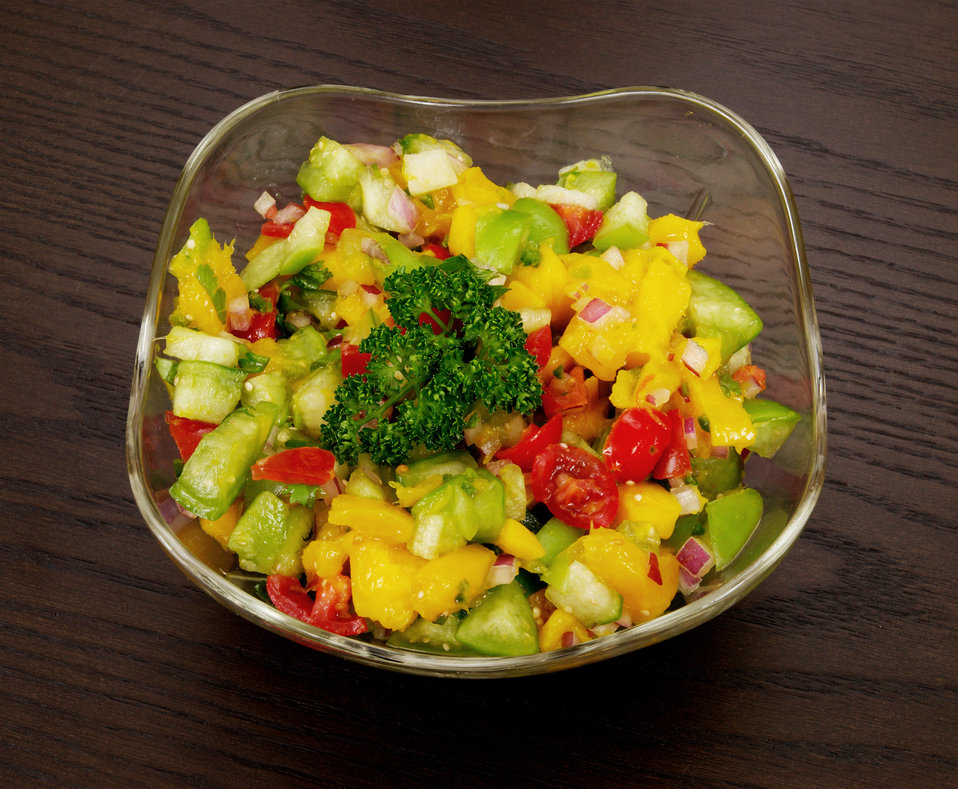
This fruit salad is a healthy choice, for it contains a number of nutrient-dense ingredients.